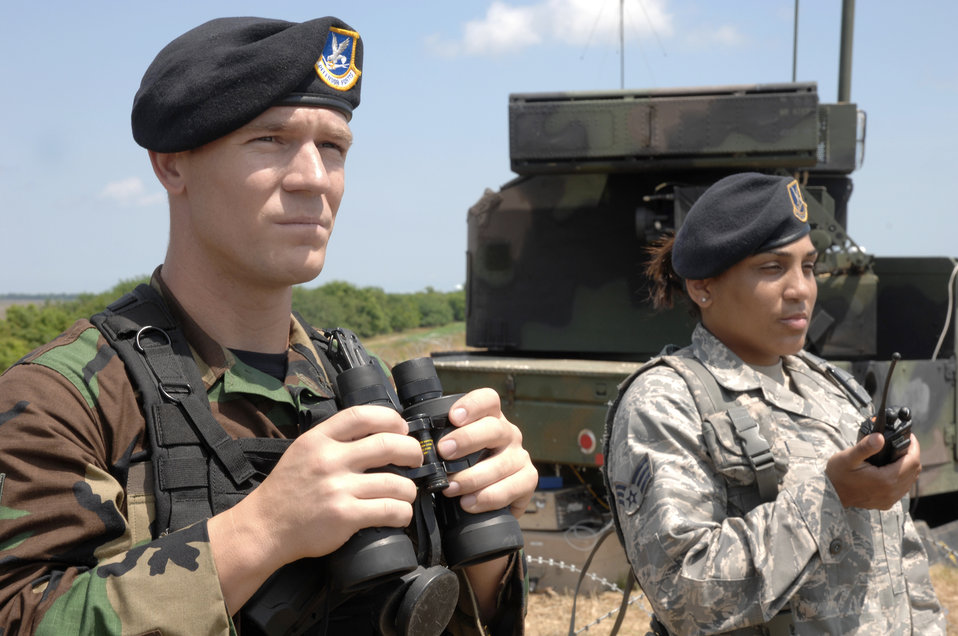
Guard security forces members protect exercise participants

Staff Sgt. Josh Hartzell and Senior Airman Vanessa Garcia provide perimeter security for the Avenger air defense missile system during Exercise Ardent Sentry '10 May 15, 2010, in Savannah, Ga. Sergeant Hartzel l and Airman Garcia are from the 165th Security Forces Squadron.